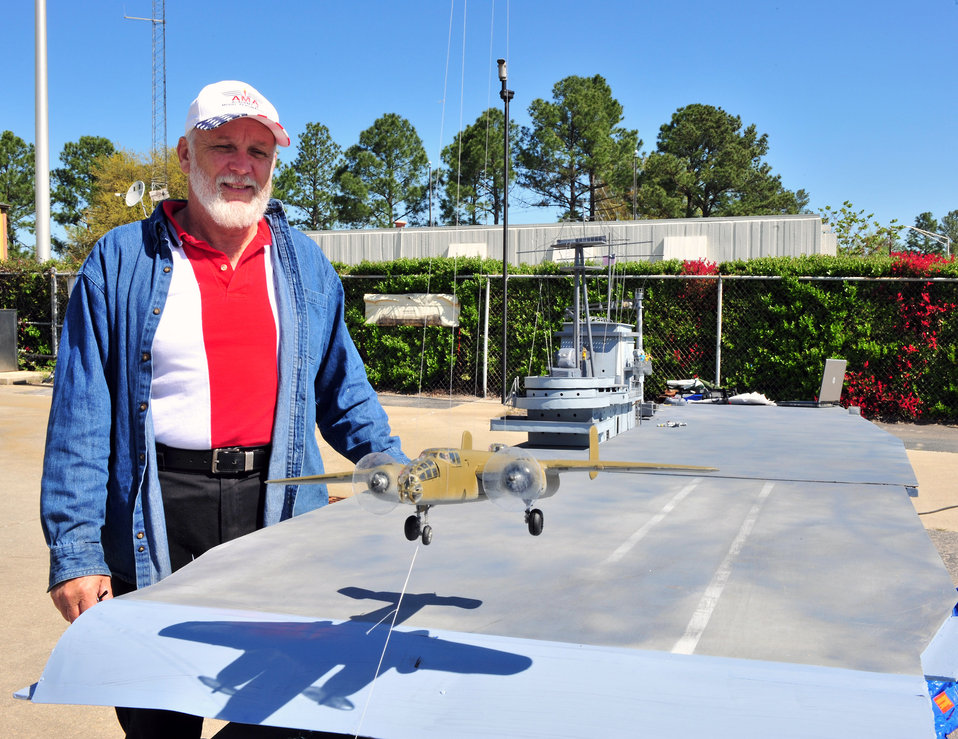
Thousands honor Doolittle Raiders at the 67th Reunion

Jerry Branch displays his replica USS Hornet with B-25s launching off the deck during a Doolittle Raider celebration April 17 at Columbia Metro Airport in Columbia, S.C. Mr. Branch built the model in tribute to the Doolittle Raiders.